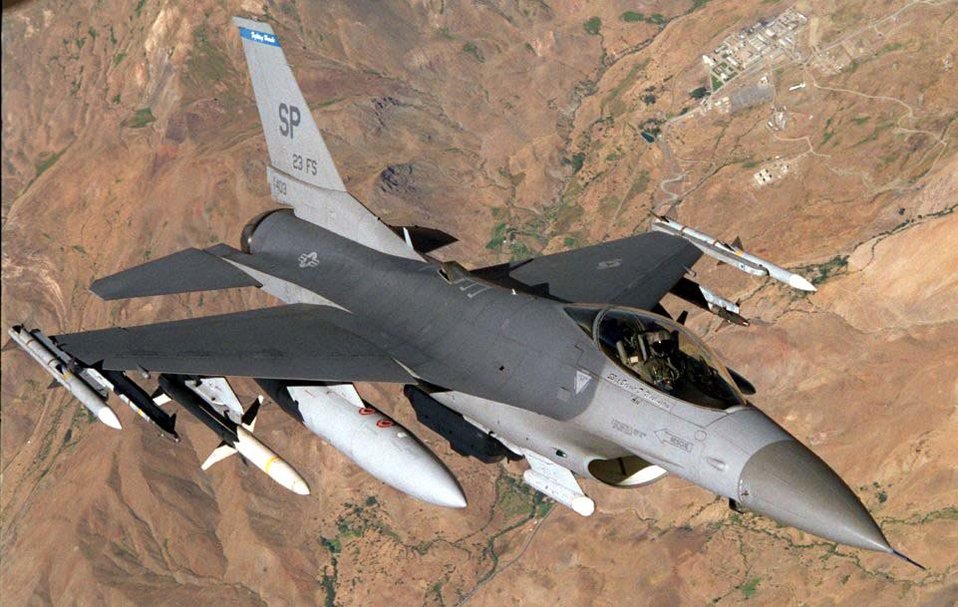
F-16 Fighting Falcon

NORTHERN WATCH -- In an air combat role, the F-16 Fighting Falcon's maneuverability and combat radius (distance it can fly to enter air combat, stay, fight and return) exceed that of all potential threat fighter aircraft. It can locate targets in all weather conditions and detect low flying aircraft in radar ground clutter. In an air-to-surface role, the F-16 can fly more than 500 miles, deliver its weapons with superior accuracy, defend itself against enemy aircraft, and return to its starting point. An all-weather capability allows it to accurately deliver ordnance during non-visual bombing conditions.